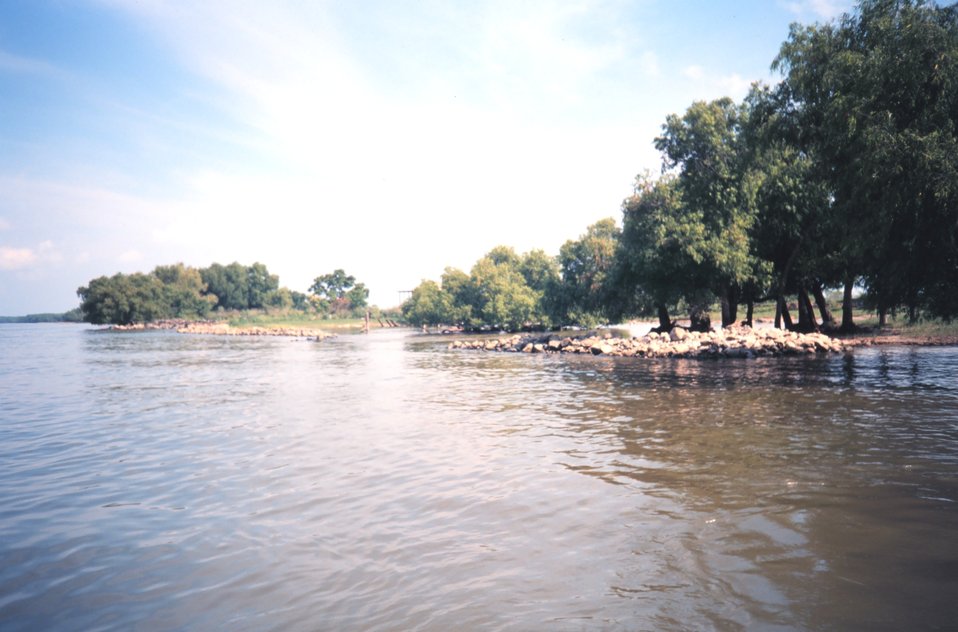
Mississippi River during moderate spring flooding